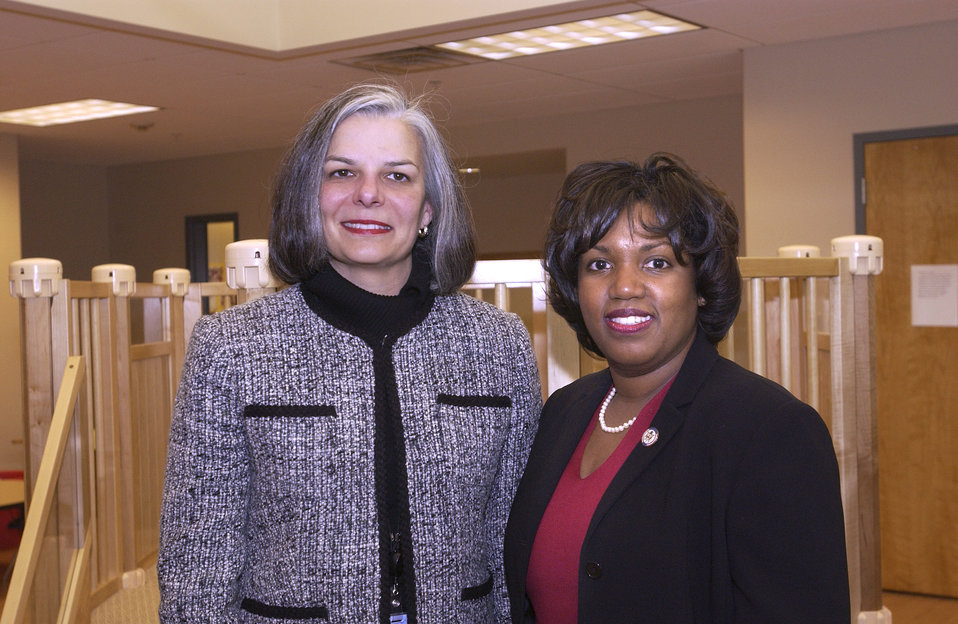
This 2003 photograph featured former CDC Director (2002 - 2008), Julie Louise Gerberding, M.D., M.P.H. (left), as she stood with Georgia congresswoman Denise Majette, during the official opening of The Clifton School.